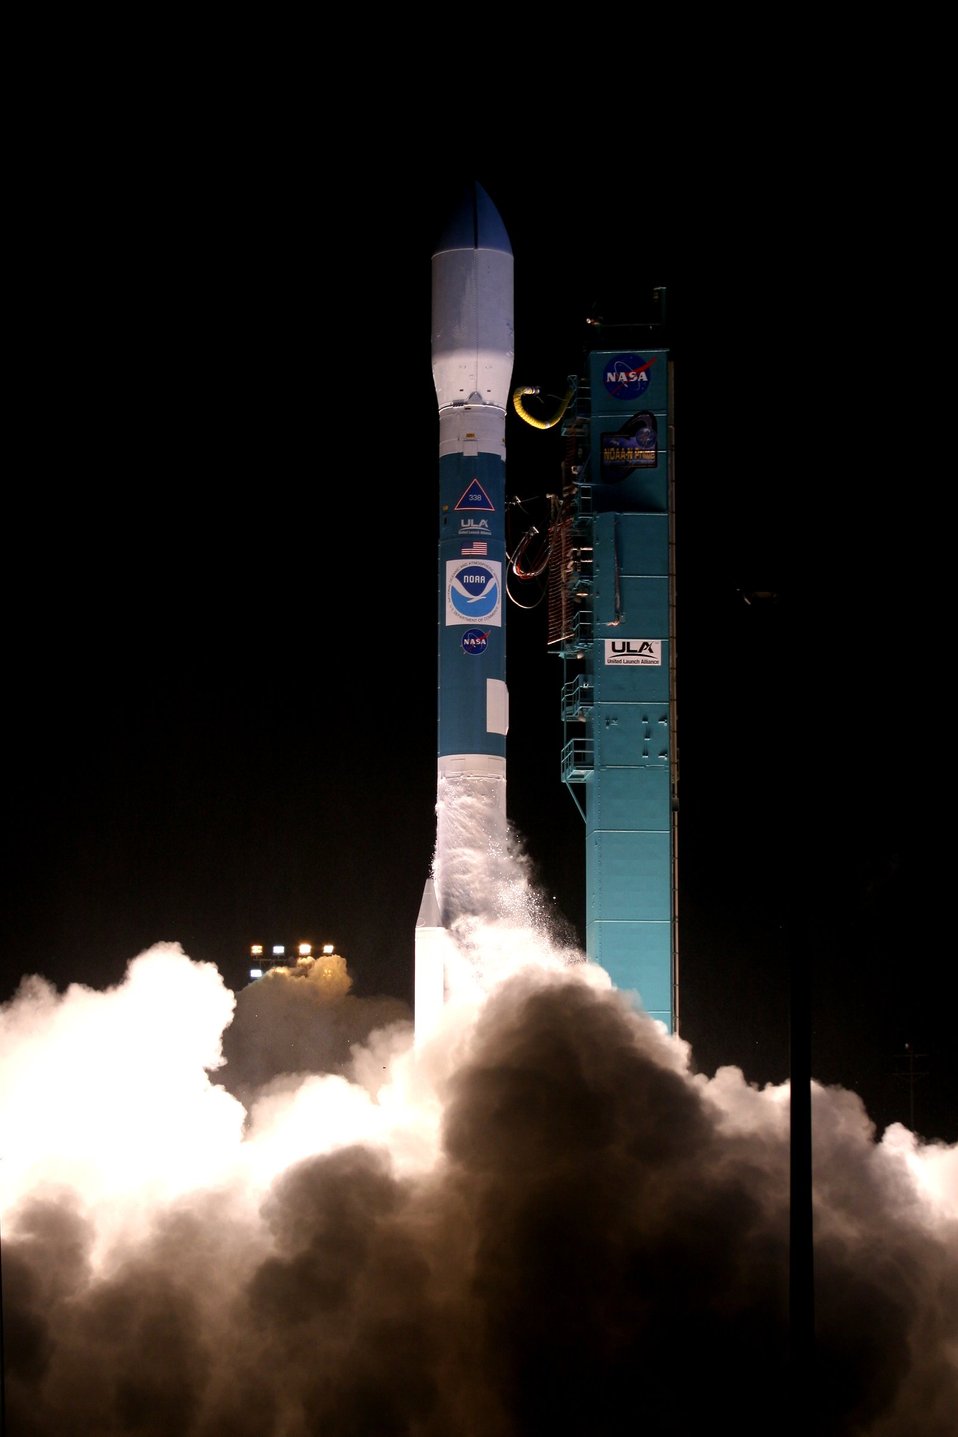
Launch of NOAA-N Prime from Vandenberg Air Force Base.